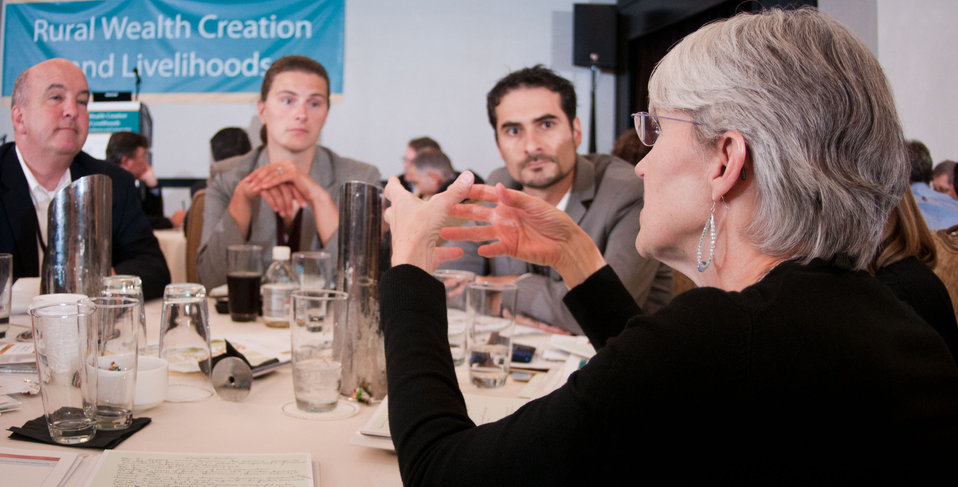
Rural Policy Research Institute (RUPRI) Center for Rural Entrepreneurship Managing Director Deborah Markley (right) discusses a topic with her group during the general session of the Rural Wealth Creation and Livelihoods national conference for practitioners, researchers and policymakers, held at the Dupont Hotel, Washington DC, on Monday October 3, 2011.